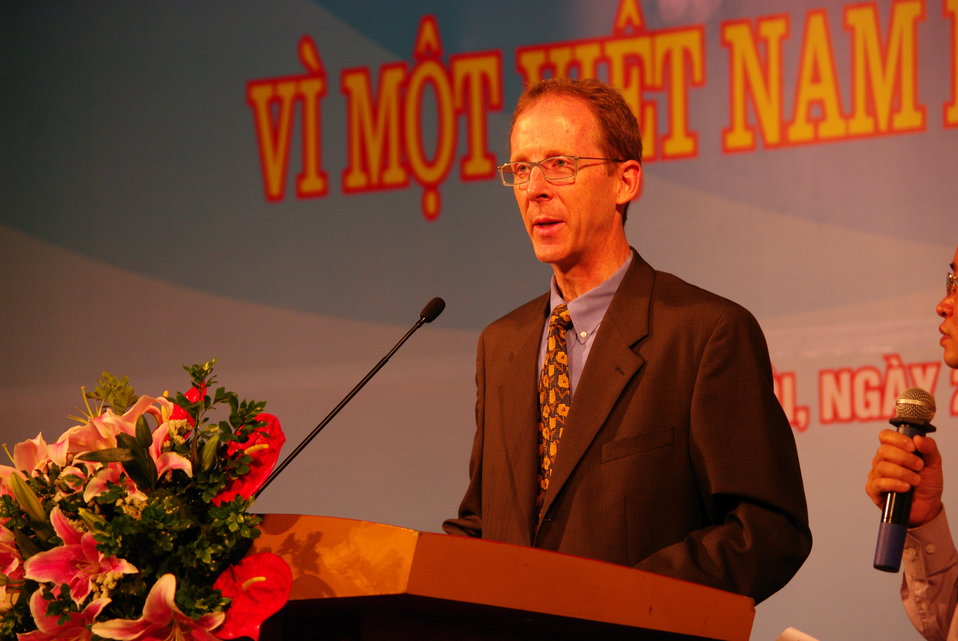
USAID Mission Director Joakim Parker speaks at Vietnam's World TB Day Event in Hanoi

March 23, 2013